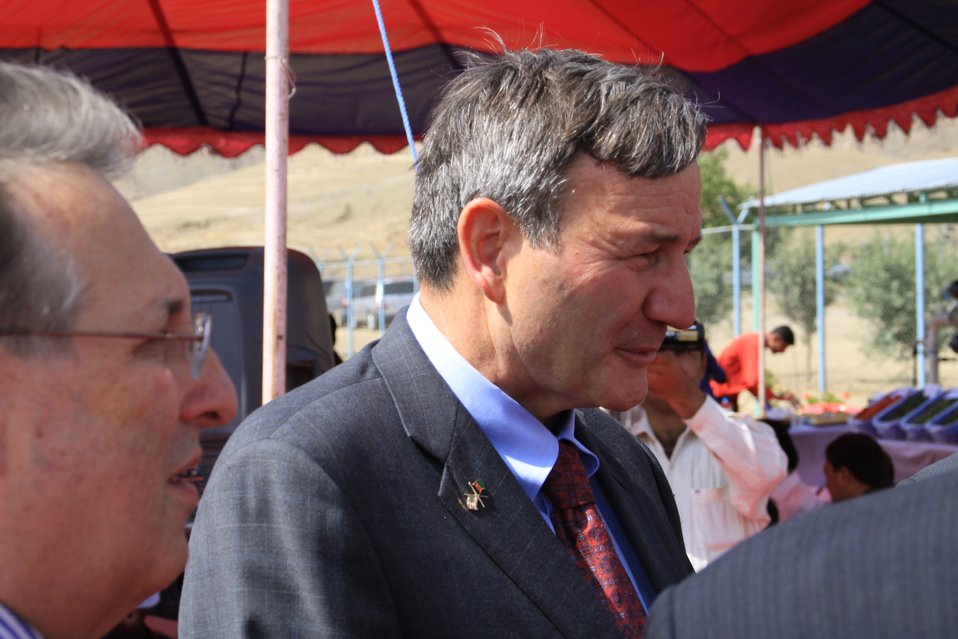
Badam Bagh Farm